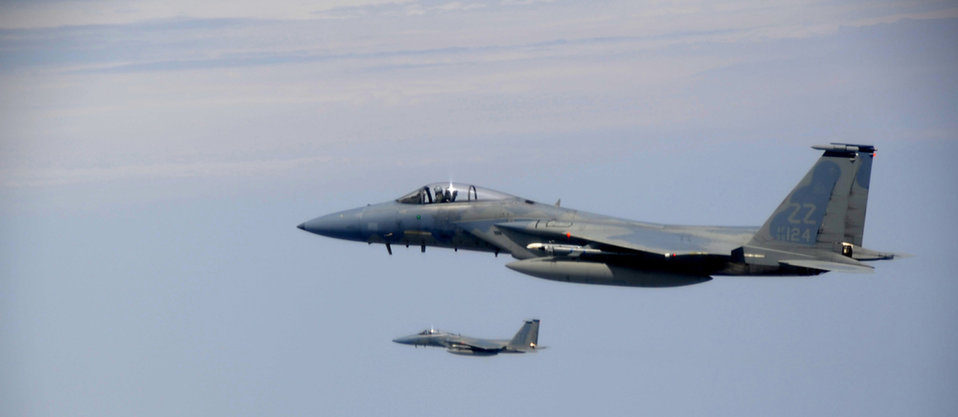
Cope Tiger 2011

F-15 Eagles assigned to the 44th Expeditionary Fighter Squadron at Kadena Air Base, Japan, fly over Thailand March 23, 2011, prior to starting an exercise scenario during Cope Tiger 2011, which runs from March 14 through 25. Participants of Cope Tiger include the U.S. Air Force, the U.S. Marine Corps, the Royal Thai Air Force, Royal Thai Army and the Republic of Singapore Air Force.